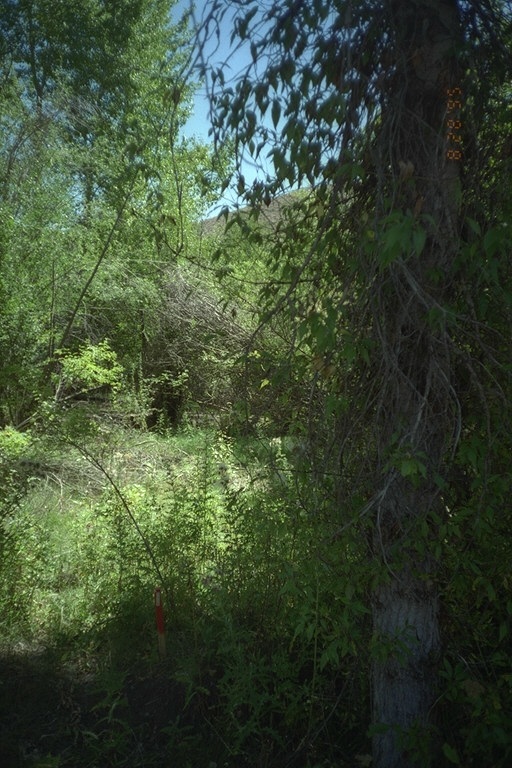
Riparian area Public Lands Salmon Field Office UCSC Upper Columbia Salmon Clearwater District